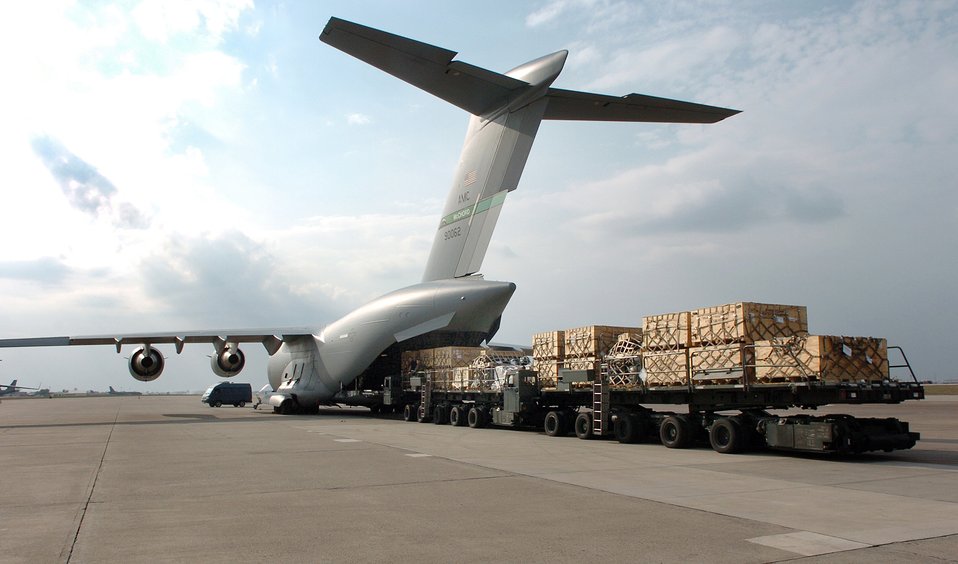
Incirlik AB

Airmen from the 728th Air Mobility Squadron load a C-17 Globemaster III at Incirlik Air Base, Turkey, Nov. 13. Over half of all air cargo delivered to support Operation Iraqi Freedom is processed through here. By flying critical supplies via Globemaster from this eastern Turkey air base directly to troops at remote locations in Iraq, more than 3,300 convoy truck missions and 9,000 servicemembers supporting the convoys are taken off Iraq roads each month.